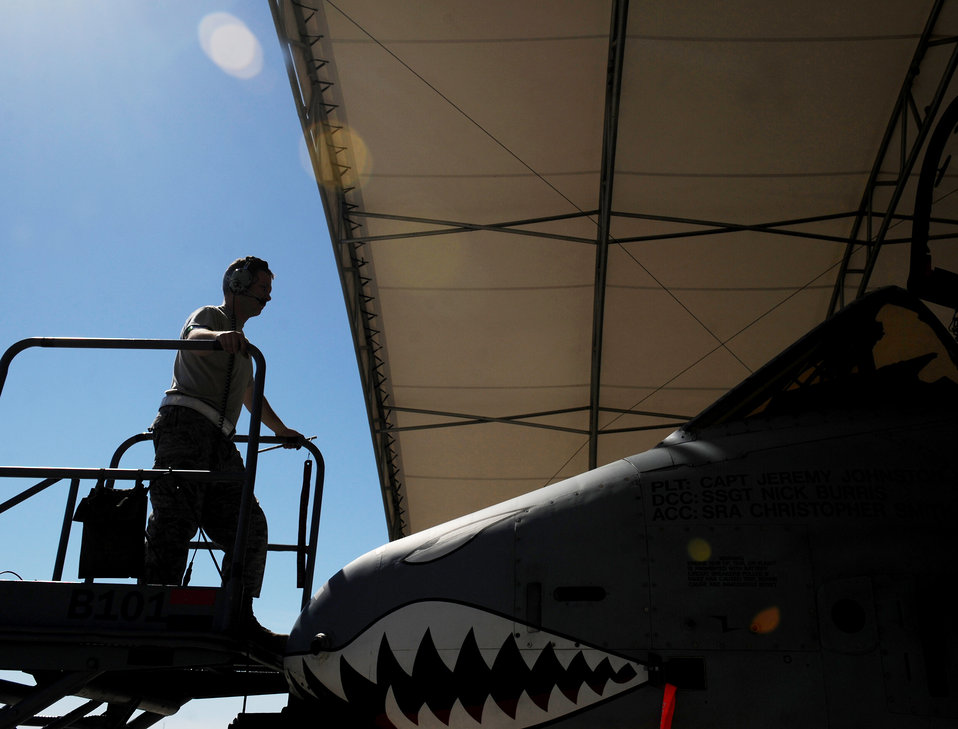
Nothing more to do

An Airman surveys his work on an A-10C Thunderbolt II during an operational readiness inspection phase I at Moody Air Force Base, Ga., March 8, 2010. The inspection tested how well the wing prepares for a short-notice deployment tasking.